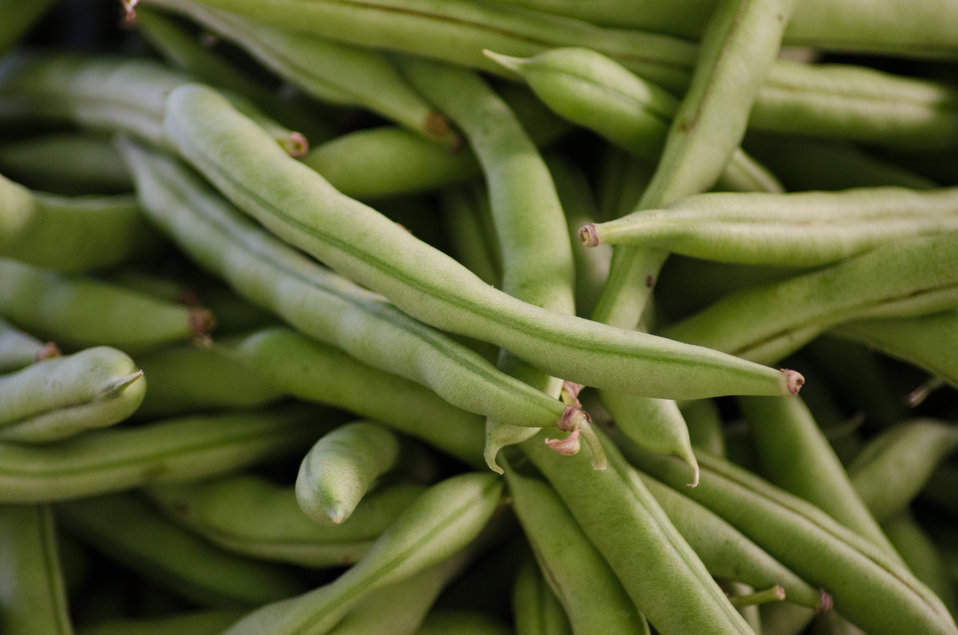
Half Runner heirloom beans sold at the Bath County Agricultural Education and Marketing Center, Owingsville, KY, on Friday, July 15, 2011. The Center was the recipient of a $400,000 Rural Business Enterprise Grant. It has given farmers and producers from Bath and surrounding counties the opportunity to manufacture and market their locally grown and locally produced value-added and “Kentucky Proud” branded products, including but not limited to, fresh produce, artisan crafts and specialty food products. The Center is open year-round and allow residents to sell products in four different retail categories, including Kentucky products, regional crafts, “green” groceries and bakery/deli. Several producers expressed their gratitude for Rural Development’s assistance in making the center a reality. The project was made possible through funding the American Recovery and Reinvestment Act of 2009 enacted by the 111th United States Congress in February 2009 and signed into law on February 17, 2009, by President Barack Obama.